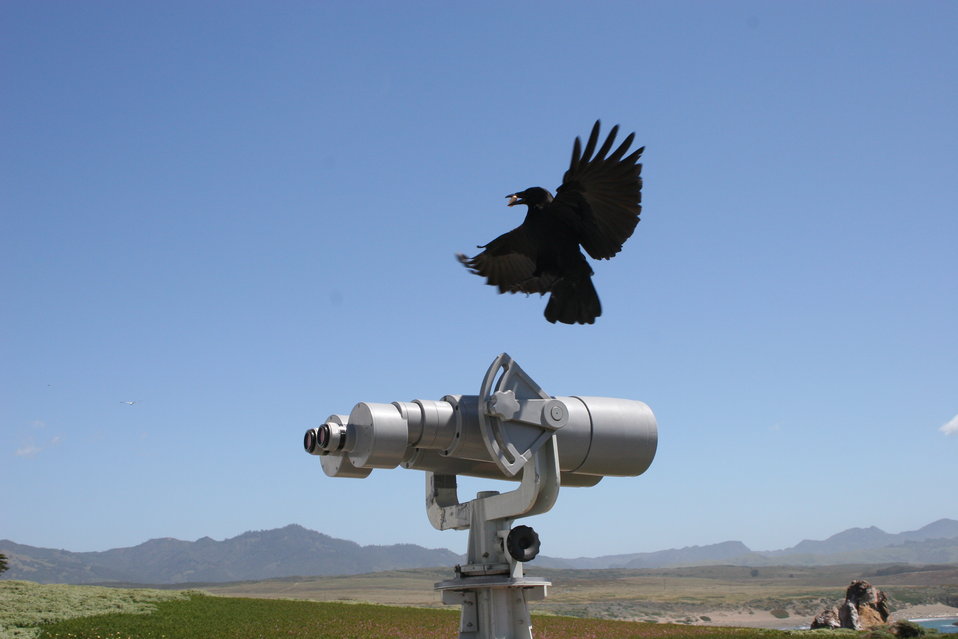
'Bob-the-Crow,' a crow who became accustomed to the whale researchers presence at Point Piedras Blancas and would land on their equipment, such as the big-eye binoculars.